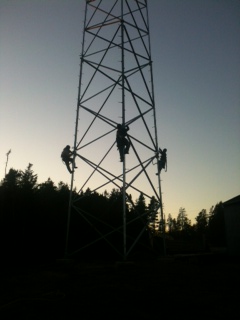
Great Wass Tower

The Great Wass tower is one of the many towers owned and operated by telecommunications company Axiom Technologies in Machias, ME, which provides 46 rural Maine towns with broadband access over 2,500 square miles. Axiom Technologies was able to expand and purchase its own building with funding support through the U.S. Department of Agriculture's (USDA) Rural Development (RD) Intermediary Relending Program (IRP).